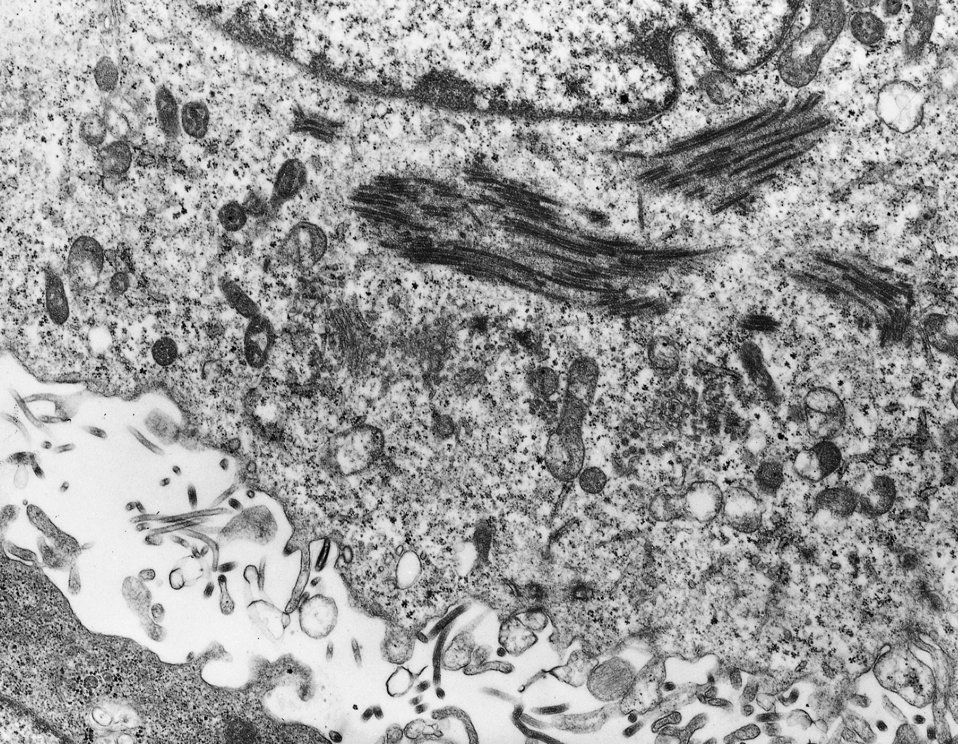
This electron micrograph shows a thin section containing the Ebola virus, the causative agent for African Hemorrhagic Fever.